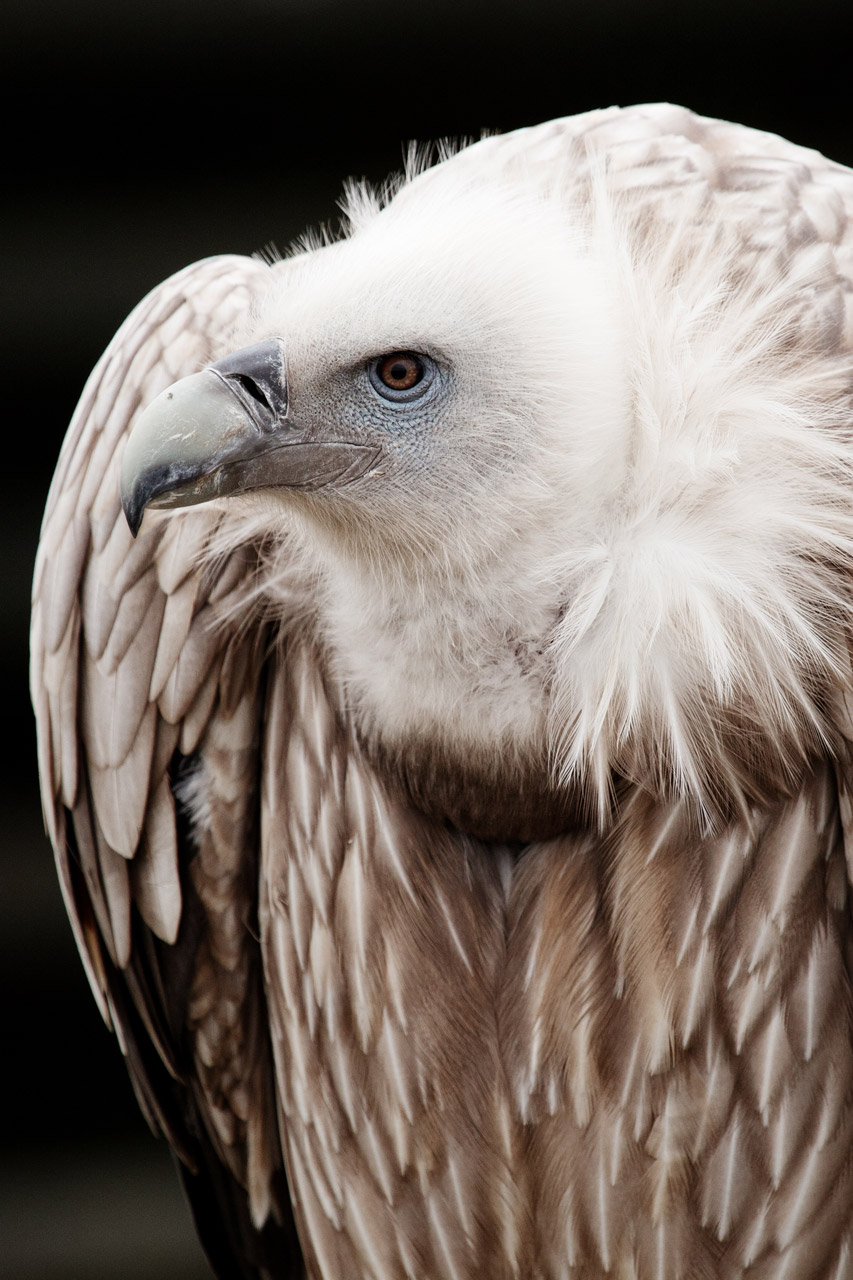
Vulture portrait

Portrait of a vulture bird.